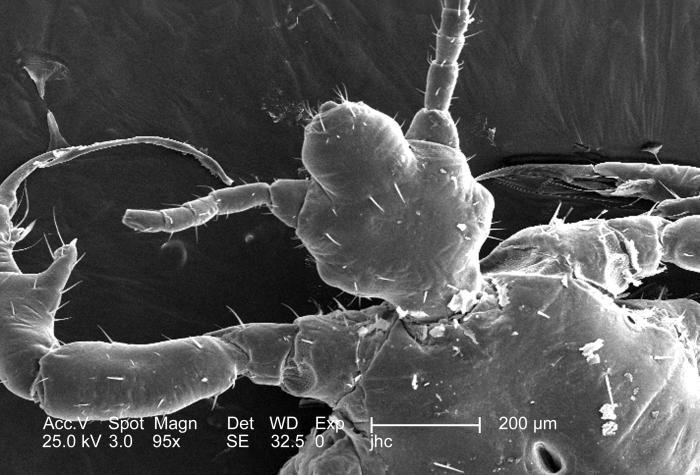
At a low magnification of 95x, this 2006 scanning electron micrograph (SEM) depicted an enlarged dorsal view of the cephalic, or head region of a male louse, Pediculus humanus var. corporis. In this particular view, the louse's 'haustellum' is withdrawn, or internalized inside the mouth region of the insect's cephalic region. The haustellum is a tube-like structure, fromed from what is believed to be a modification of the labium, but is armed with teeth, which act to grab, and hold on to the skin surface of its host while obtaining its blood meal. The insect pierces the host's skin with its sharply-pointed set of three stylets, which together for what is termed the fascicle. The pair of jointed bilateral antennae and the insect's body sport sensorial 'hairs' known as "setae', both of which provided the organism with a "picture' of its environment, by taking readings in thermal, chemical, and mechanical changes encountered in its immediate surroundings.